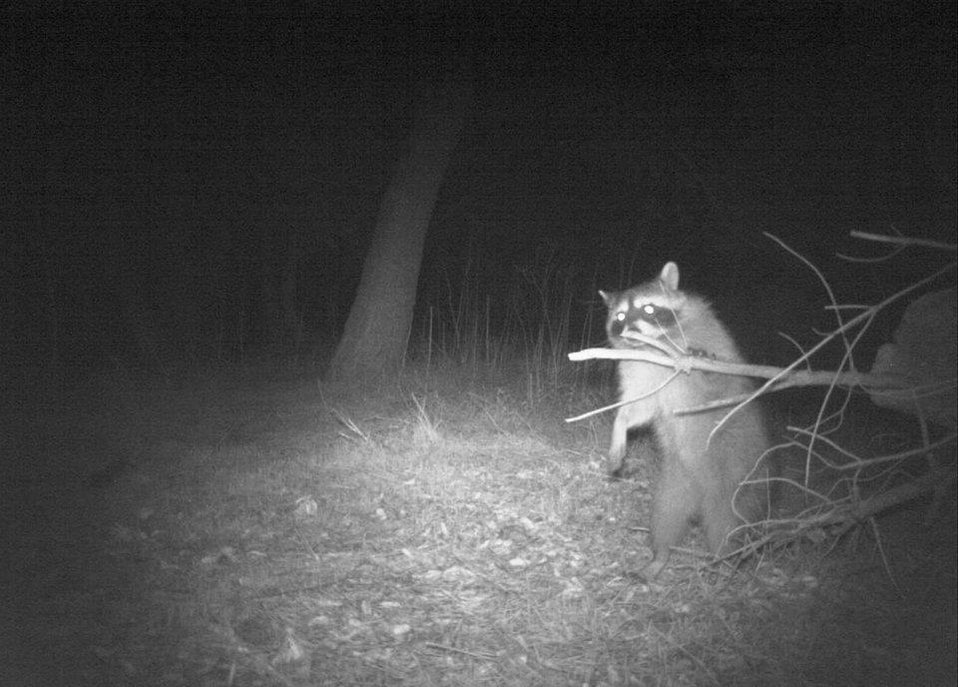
raccoon

Don Edwards San Francisco Bay National Wildlife Refuge, CA
Camera trap photo: Bryan White, USFWS